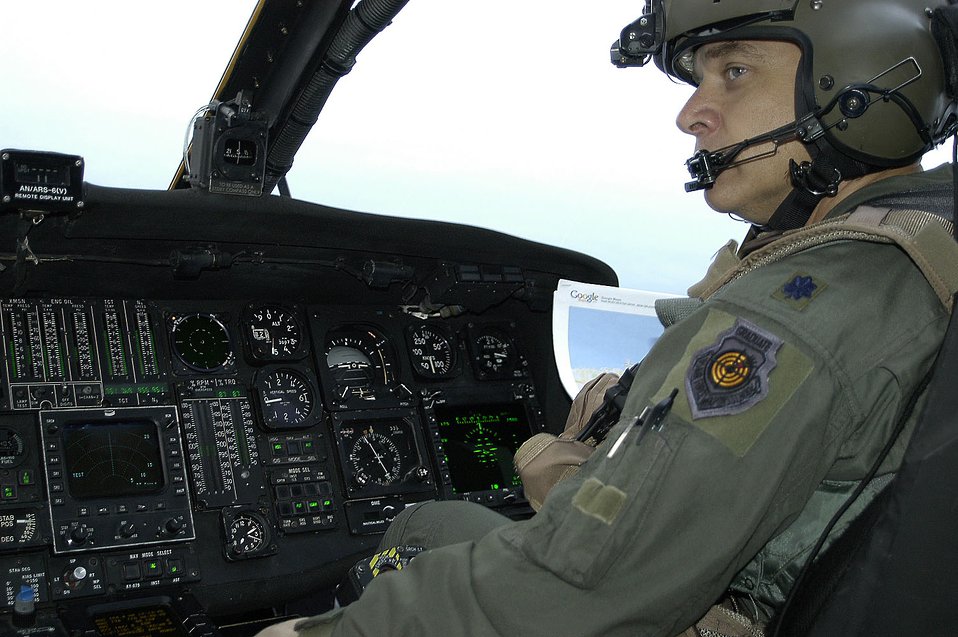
Rescue teams use cyber tools

NEW ORLEANS -- Lt. Col. Rob Ament checks the gauges of his HH-60G Pave Hawk helicopter as he prepares to search for Hurricane Katrina survivors. Flying missions out of Jackson, Miss., Colonel Ament and his team of Air Force reservists are finding innovative ways to use the Internet, e-mails and satellite technology to check for survivors and people who need still need help. He is the director of operations for the 920th Rescue Wing at Patrick Air Force Base, Fla.